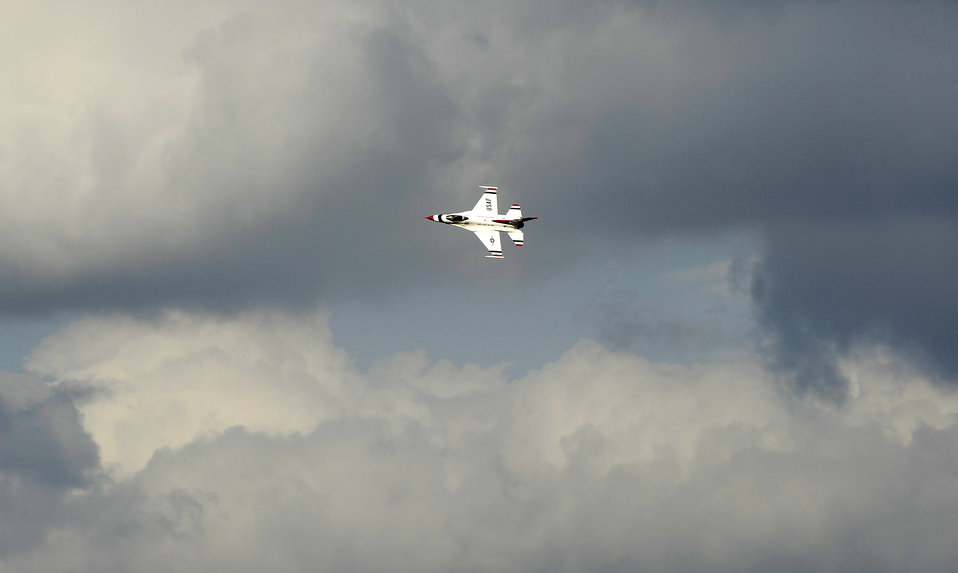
Soaring through the clouds

An Air Force Thunderbird F-16 flies over Osan Air Base, South Korea, Oct. 19, 2009, in preparation for the base Airpower Day air show.